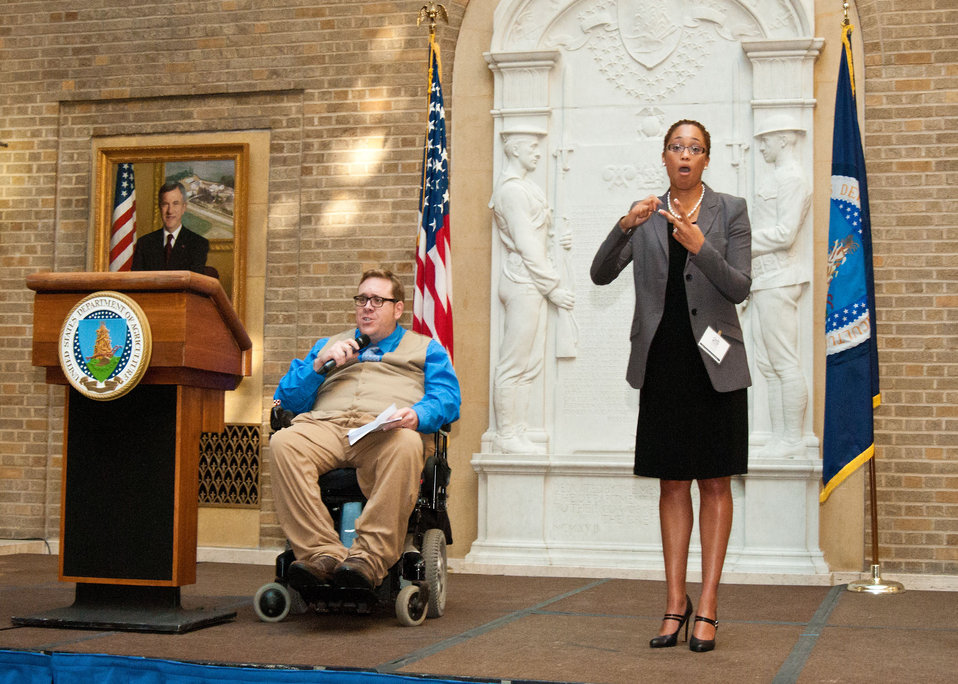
Founder of Federal Employees with Disabilities (FEDS) Jason Olsen speaks at the U.S. Department of Agriculture (USDA) Departmental Management (DM) Target Center 20th Anniversary at USDA in Washington, D.C. on Thursday, Sept. 13, 2012. FEDs is a not-for-profit organization dedicated to ensuring that the rights, privileges, benefits and opportunities for individuals employed by the Federal government are equal to those of their Federal sector peers. The USDA Target Center has provides Assistive Technology to employees with disabilities. The Center has assisted thousands of individuals with disabilities to further contribute to the mission of USDA.